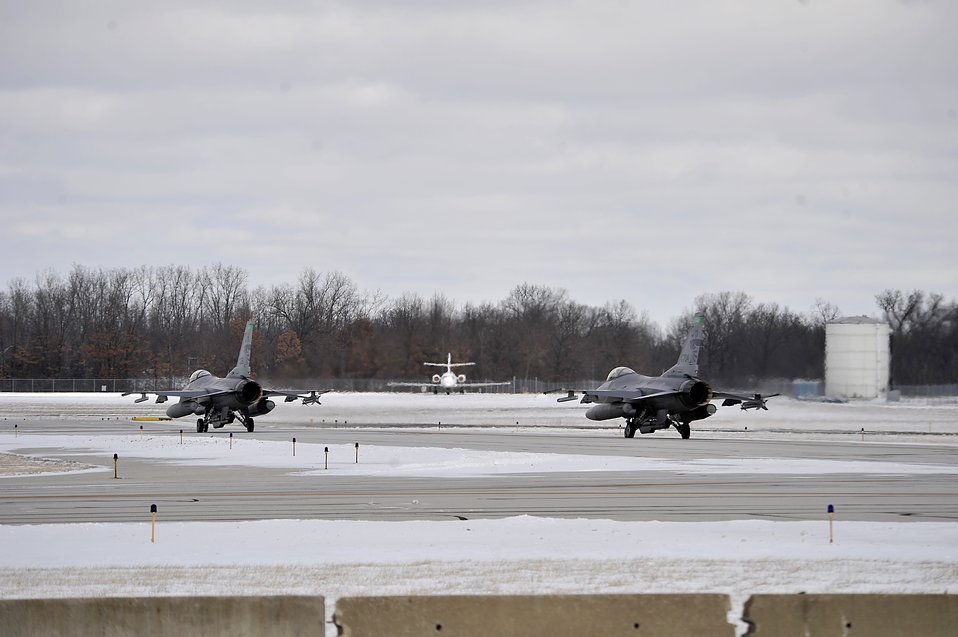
Ohio Air National Guard Base fuels test

Two F-16 Fighting Falcons taxi down the runway for a trainng mission Feb. 12, 2012 from Ohio Air National Guard Base. The F-16s are being fueled with a 50/50 conventional and biofuel blend as part of a field service evaluation. The jets are assigned to the 180th Fighter Wing.